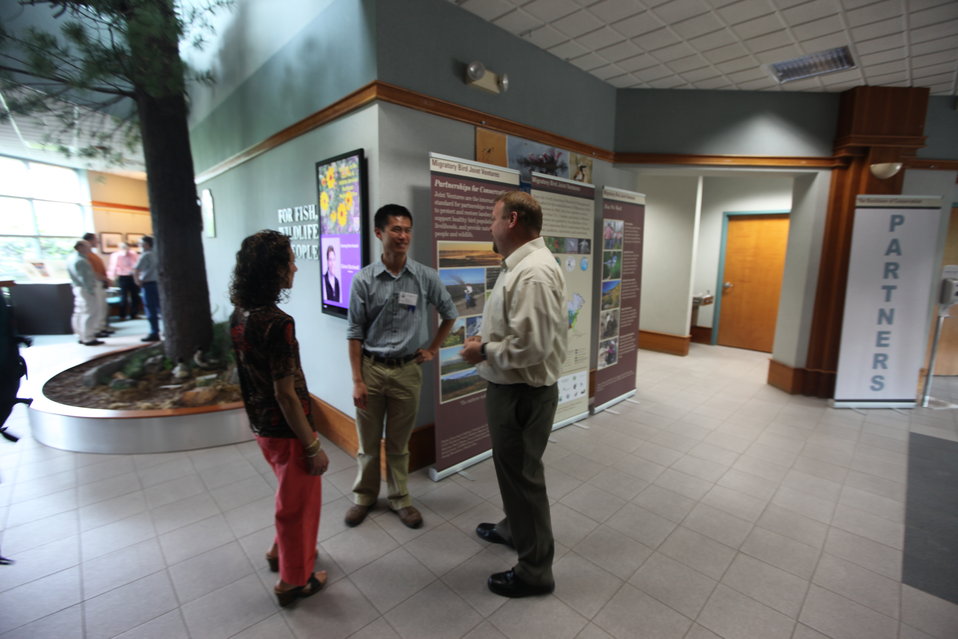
Northeast Region Employee Appreciation Awards

Before the awards ceremony, employees from the region catch up with each other.